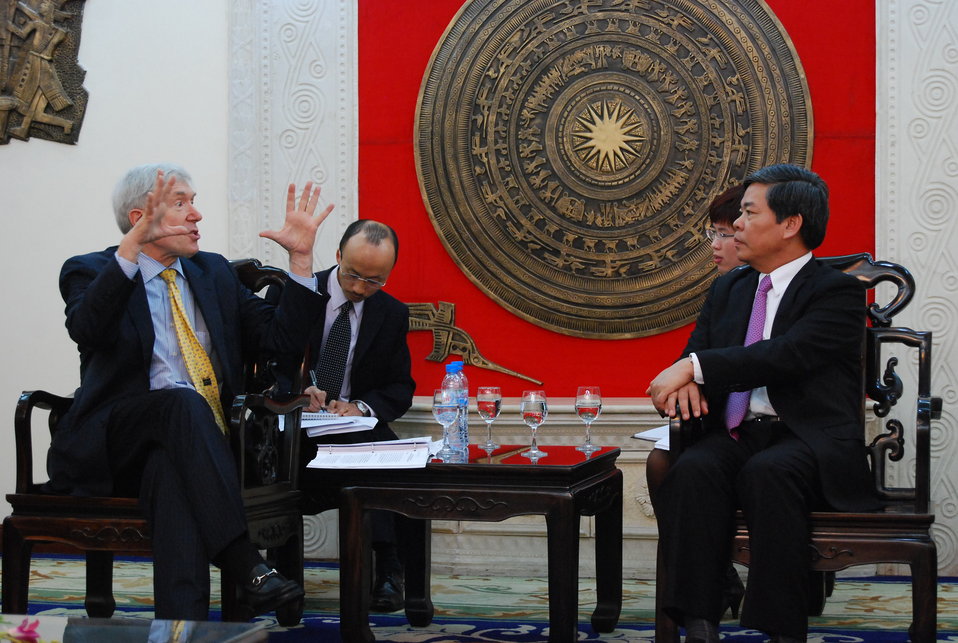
U.S.-Vietnam MOU on Low Emissions Development Strategies Signing Ceremony